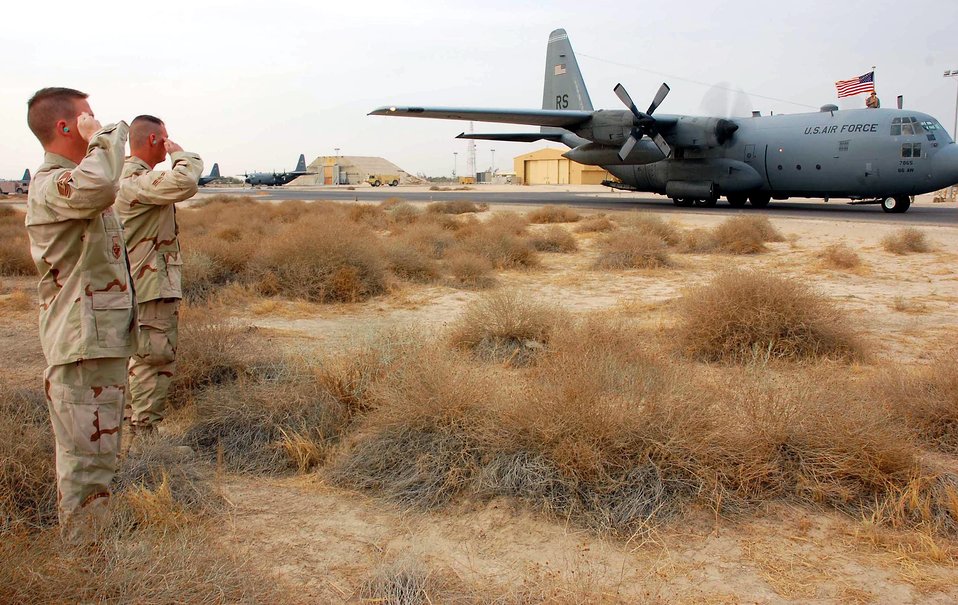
44-year old C-130 flies final combat mission, ends service

Airmen from the 386th Air Expeditionary Wing salute a C-130 Hercules, tail number 63-7865, Nov. 13 in Southwest Asia. The aircraft from Ramstein Air Base, Germany, had just flown its last combat mission and will be flown to Davis-Monthan Air Force Base, Ariz., where it will be laid to rest at the